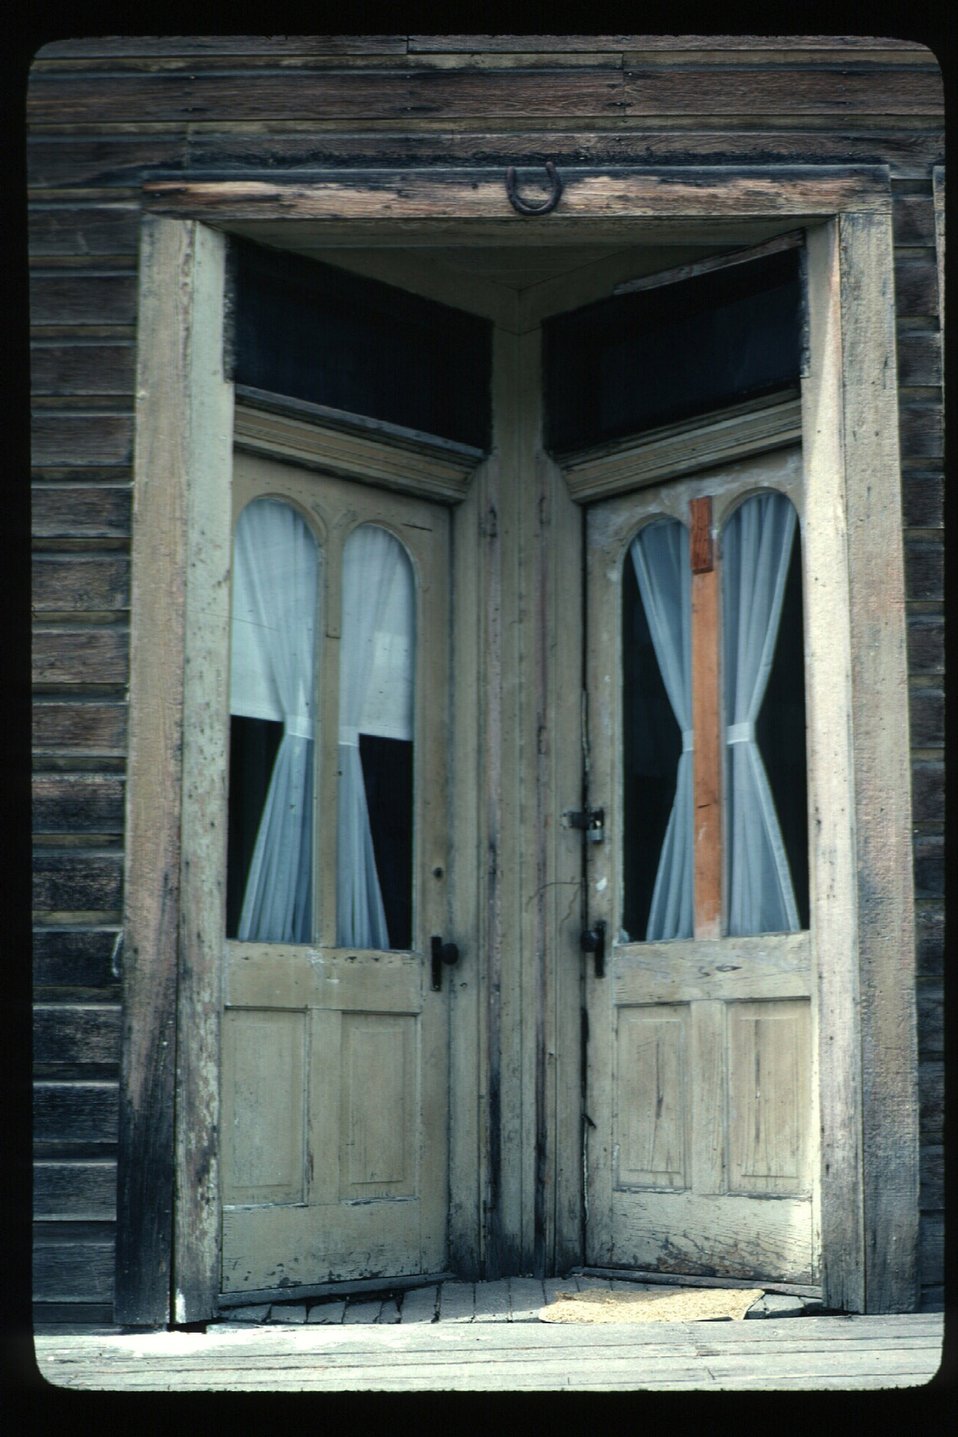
Architecture Silver City Cultural Resources Owyhee Field Office LSRD Lower Snake River District